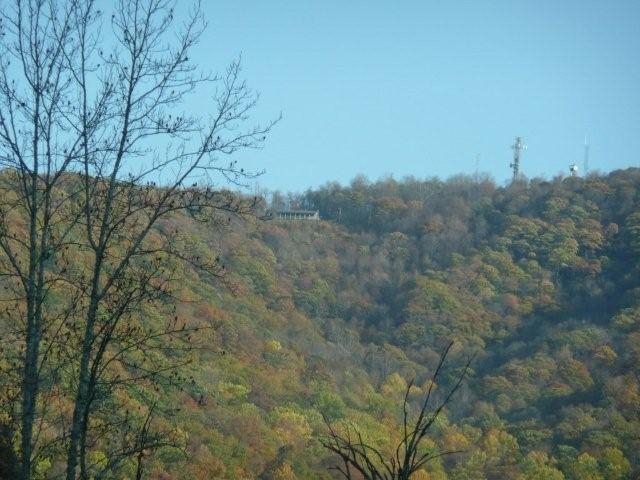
Woody's Knob Western Slope